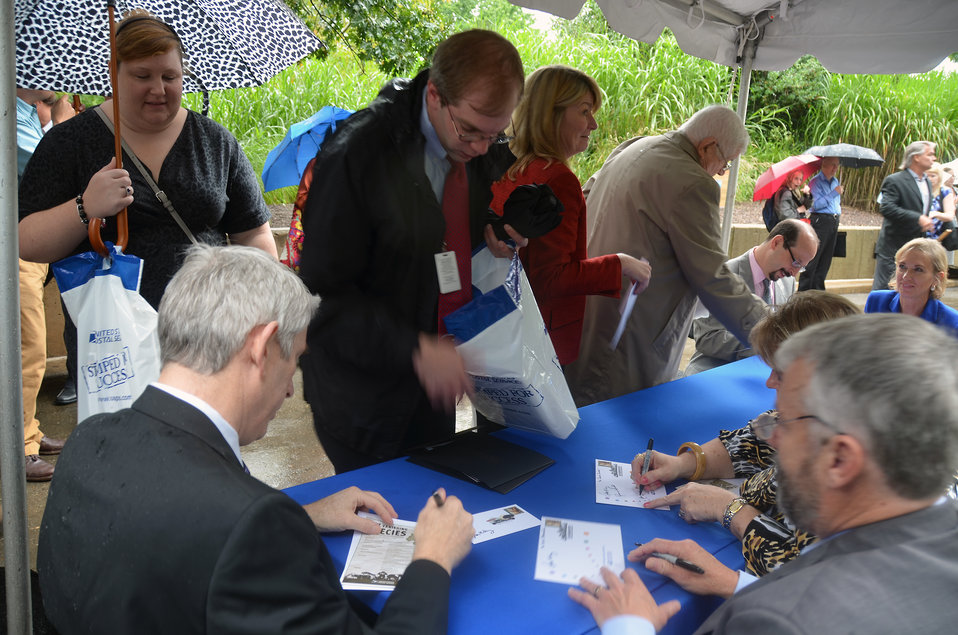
Save Vanishing Species Stamp First Day of Issue